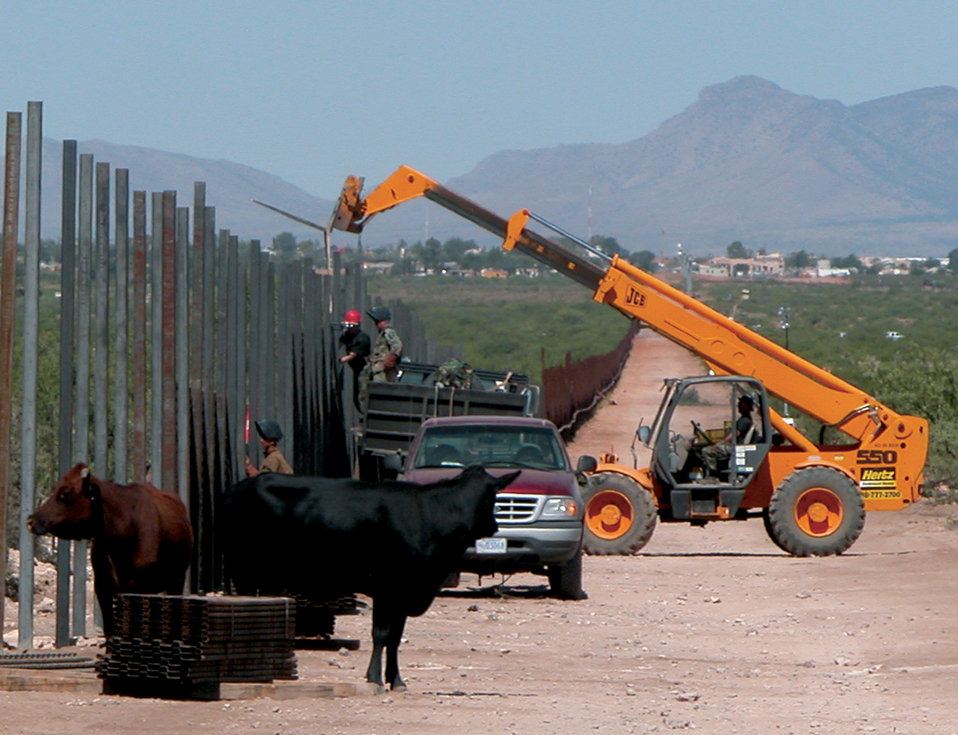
Mo-o-ove over

U.S.-MEXICO BORDER -- Cows watch as 917th Civil Engineer Squadron Airmen use steel to build a fence along the border. The fence is designed to keep drug traffickers out and the cows in. The Airmen are deployed from Barksdale Air Force Base, La., to Bisbee, Ariz., supporting a homeland security mission.